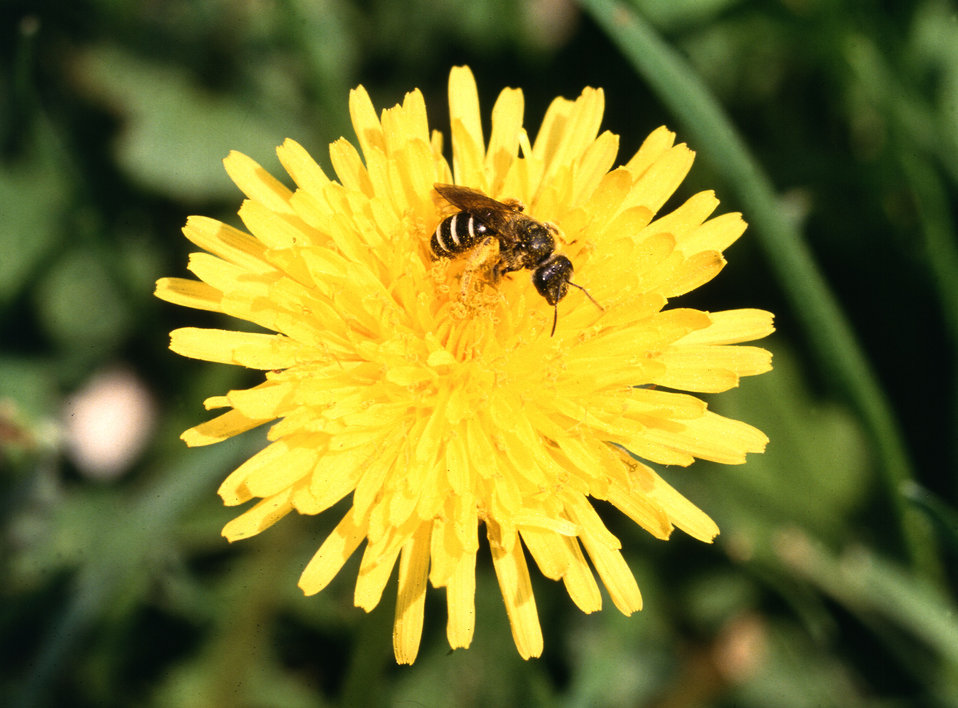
A sweat bee visits a dandelion. These small wild bees are often attracted by salty sweat on hot days.